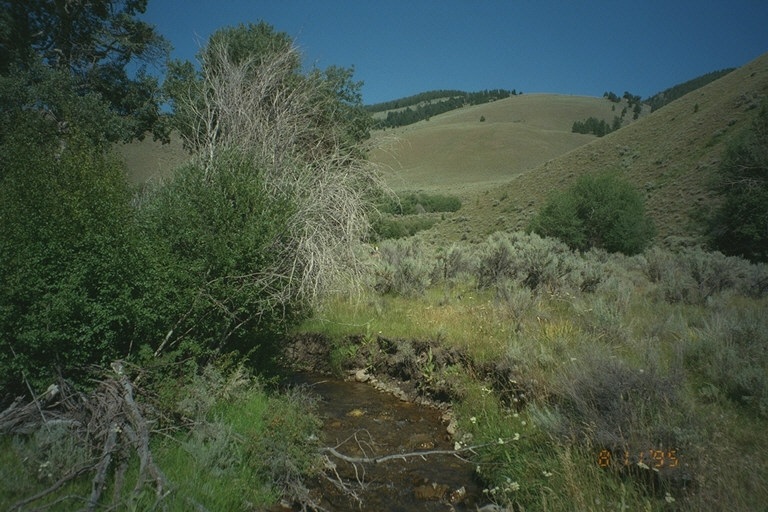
Riparian area Public Lands Salmon Field Office UCSC Upper Columbia Salmon Clearwater District